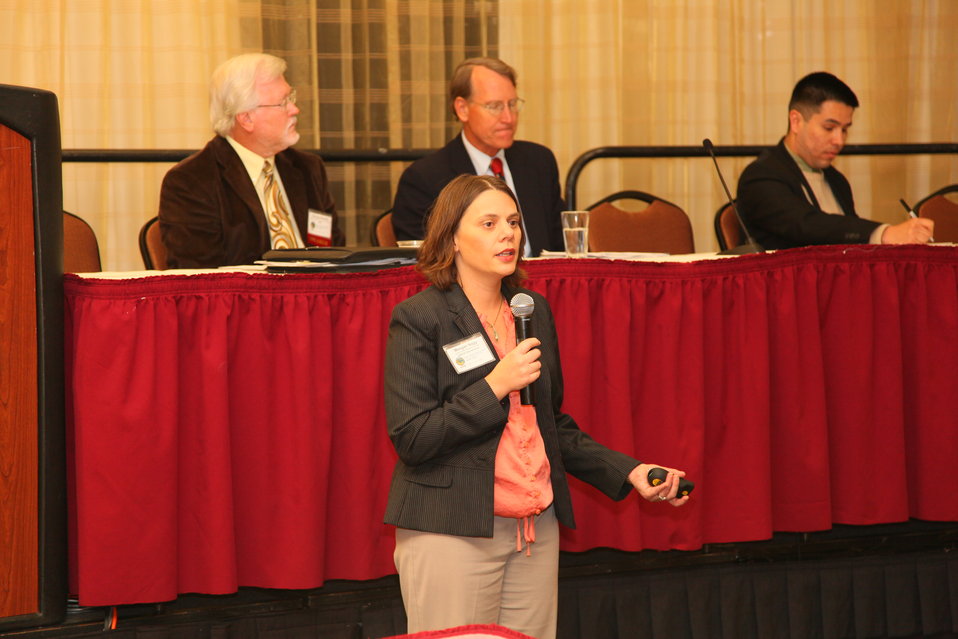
Water conference offers solutions for managing California’s complex water issues

Meegan Nagy, chief of operations readiness for the U. S. Army Corps of Engineers Sacramento District, talks about managing the impacts of vegetation on Sacramento River levees at the Society of American Military Engineers’ Water Conference in Sacramento, Calif., Oct. 5, 2011. The conference offered a venue for exchanging ideas and forming partnerships for dealing with complex California water issues ranging from water quality to unpredictable flooding events.